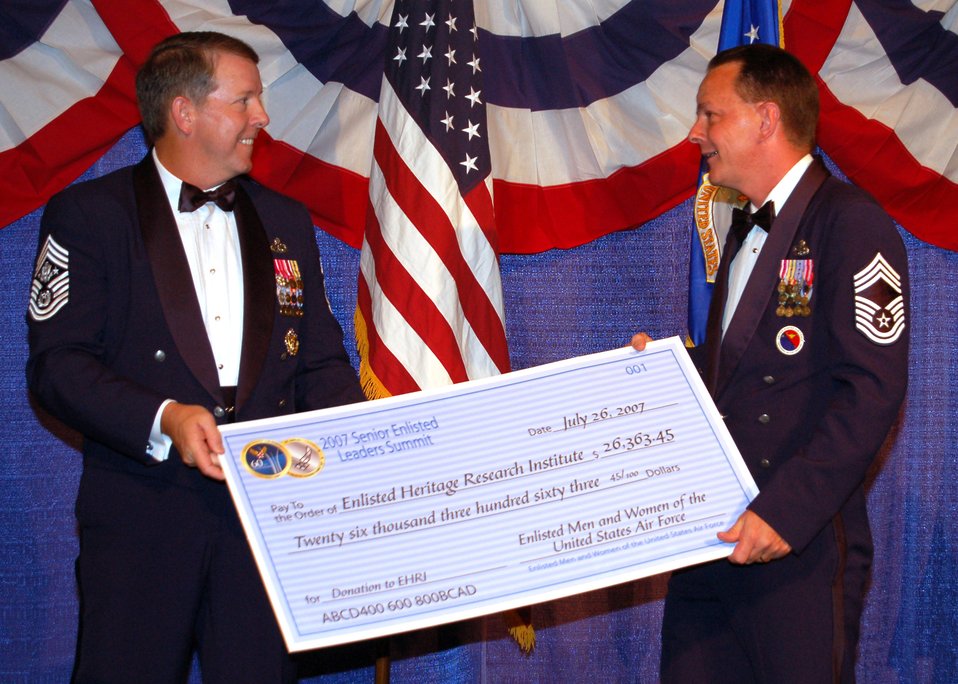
Airmen recognize impact of enlisted heritage

Chief Master Sgt. of the Air Force Rodney J. McKinley (left) presents a check for $26,363.45 to Chief Master Sgt. Malcolm McVicar during the Senior Enlisted Leaders Conference Heritage Dinner July 26 in Montgomery, Ala. Chief McVicar is the director of the Air Force Enlisted Heritage Hall.